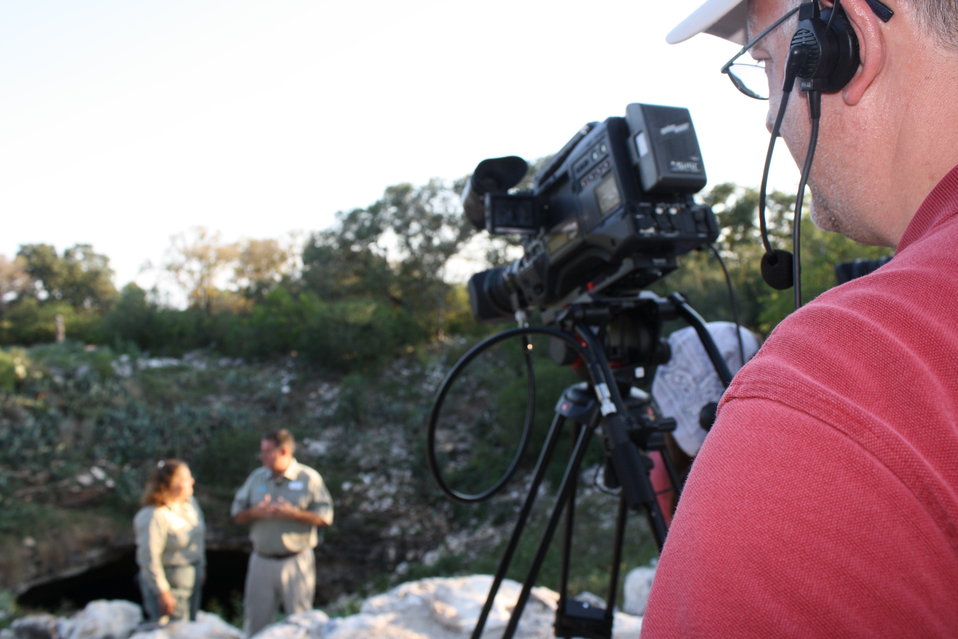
Filming BatsLIVE